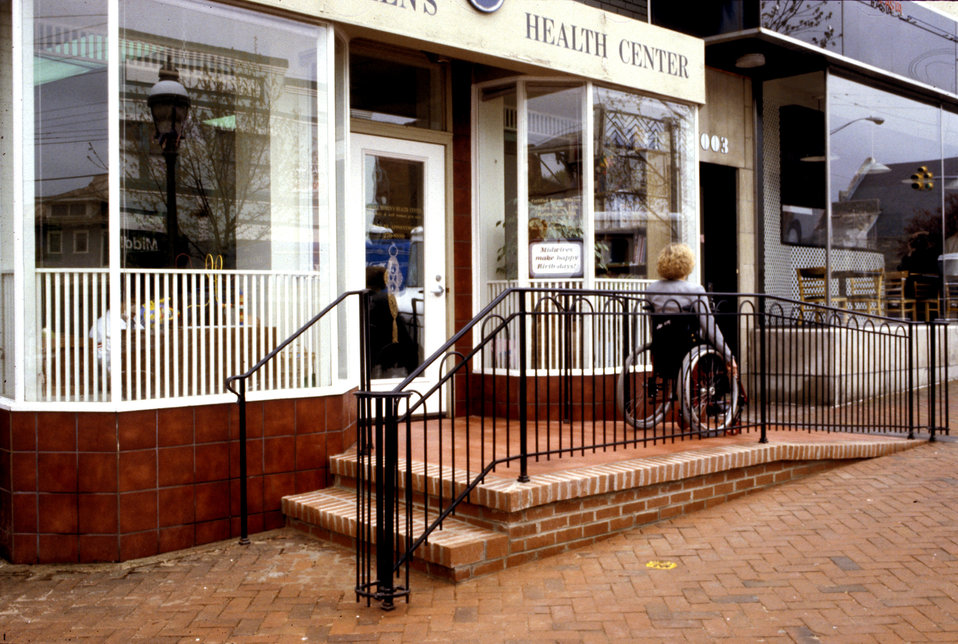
In this 1993 image, the front of a women's clinic revealed a front door that had been accessible via a two-step stoop, which made accessibility an issue for the mobility-challenged visitors (PHIL 9018 - 9021). This prompted the installation of a temporary plywood ramp at first (PHIL 9022 - 9026), which was later replaced by the permanent mortar and brick ramp seen here, as it was being used by a wheelchair-seated visitor (also see PHIL 9027 and 9028),. This concrete structure was not the perfect solution, for it lacked adequate maneuvering room near the clinic doorway. It also clearly appeared as an add-on, or after-the-fact solution that protruded into the wide sidewalk, while attempting to blend in with the existing buildings by using brick, colored concrete, and wrought iron rails. Stairs had also been provided.